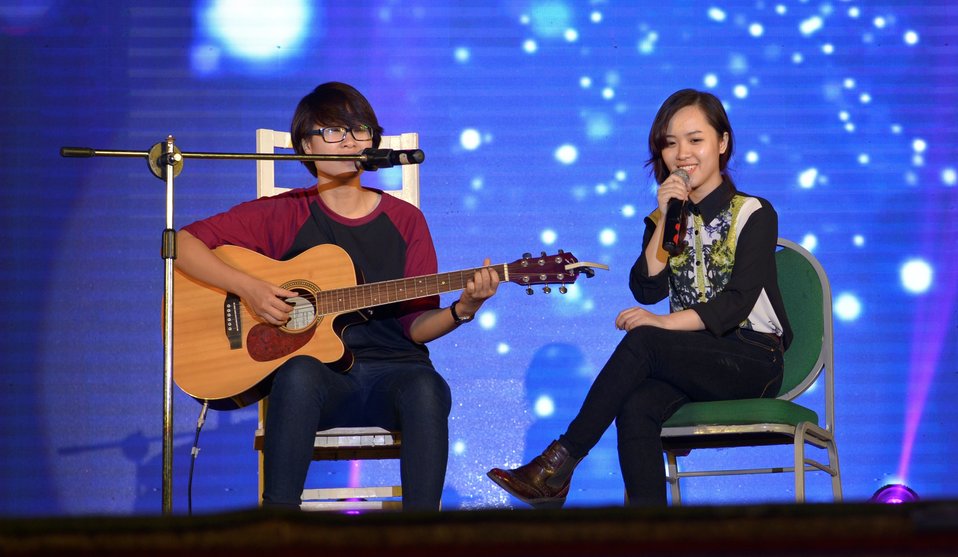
Performance at iSee LGBT Event

USAID Vietnam